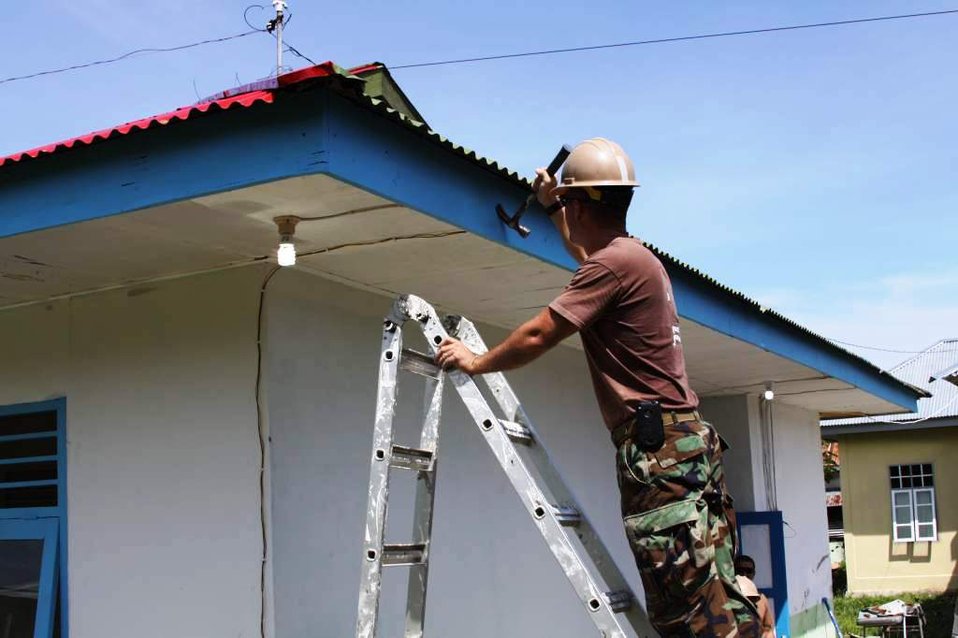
Hospital Corpsman 1st Class Trevor Wolfe Prepares Room Trim for a Final Coat of Paint

Hospital Corpsman 1st Class Trevor Wolfe, assigned to Naval Mobile Construction Battalion (NMCB) 11 out of Gulfport, Mississippi, prepares roof trim for a final coat of paint at the Daruba Hospital engineering site on July 12, 2010, in Morotai, Indonesia. The engineering project is part of Pacific Partnership 2010, the fifth in a series of annual U.S. Pacific Fleet humanitarian and civic assistance endeavors to strengthen regional partnerships.